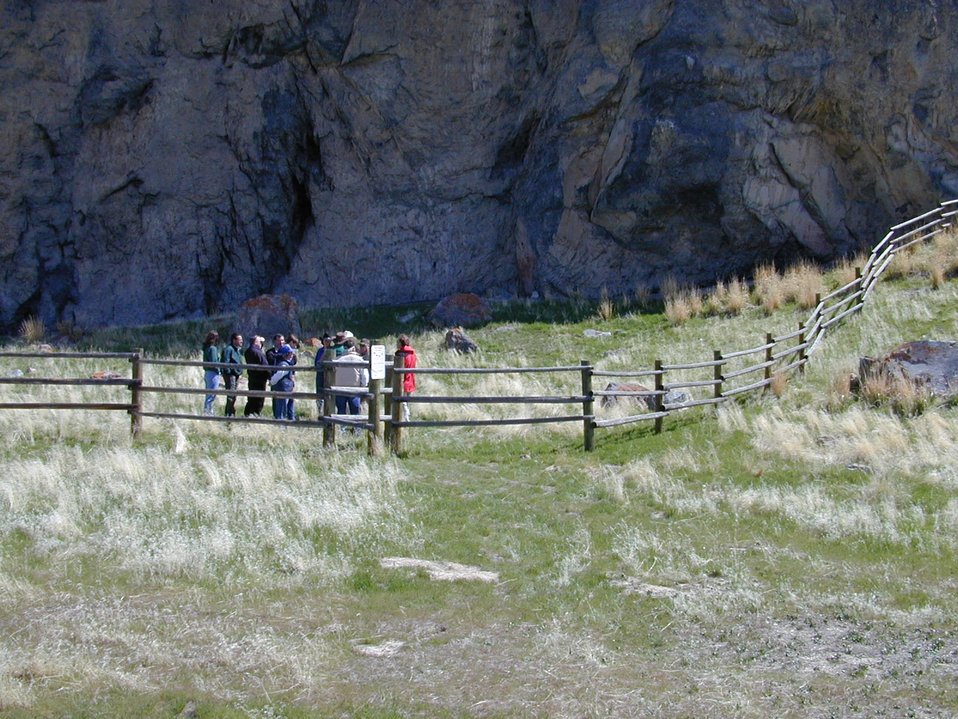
Birch Creek Valley Idaho Falls Field Office USRD Upper Snake River District